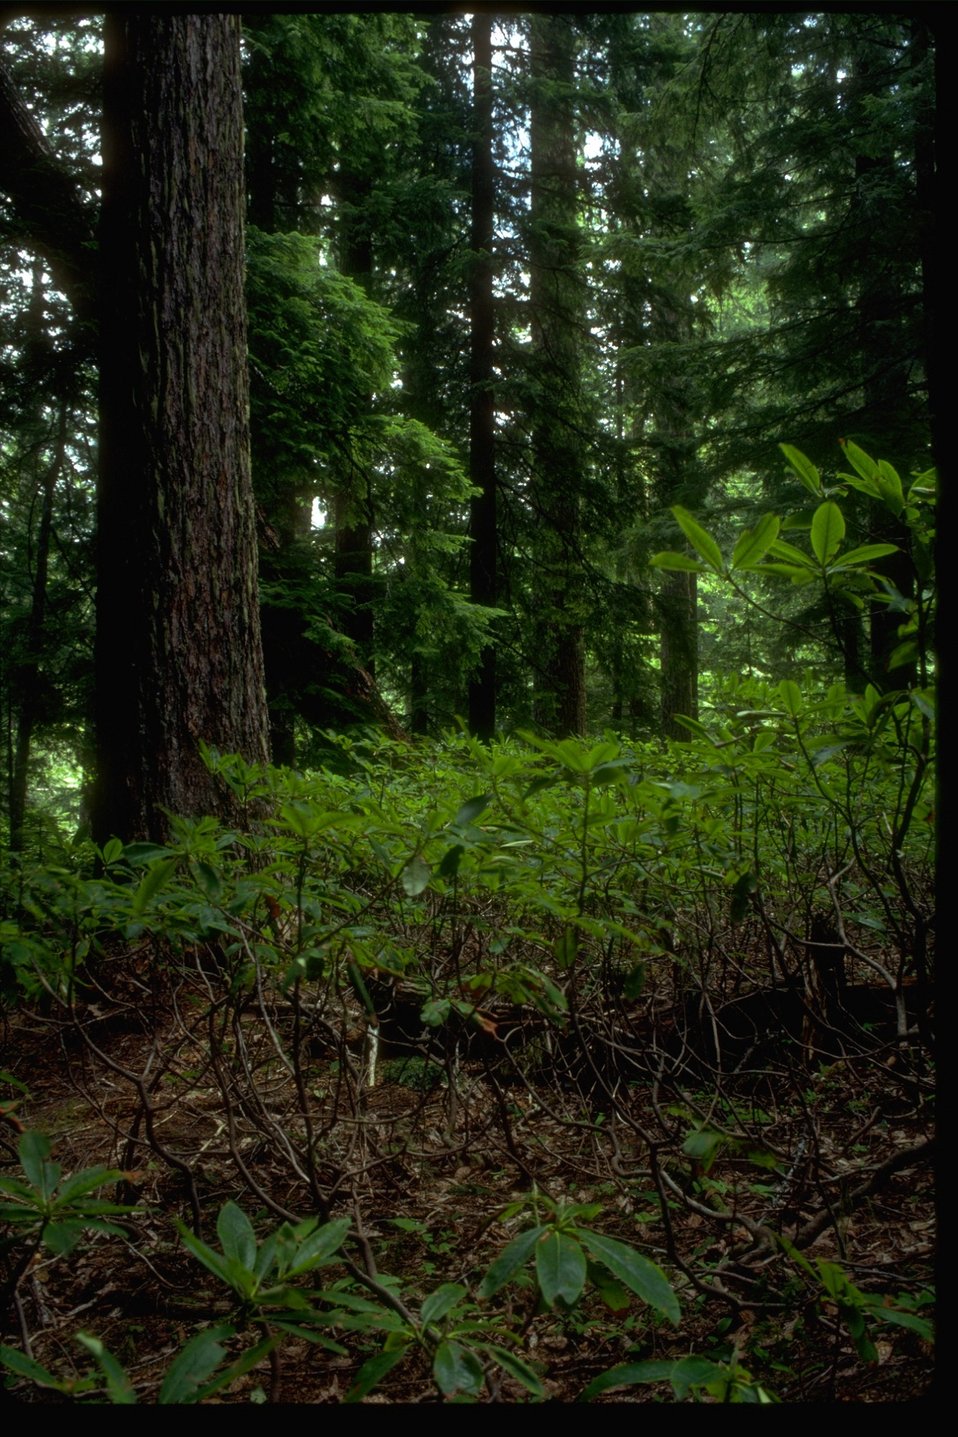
Forest Scene: Douglas Fir and Rhododendron.